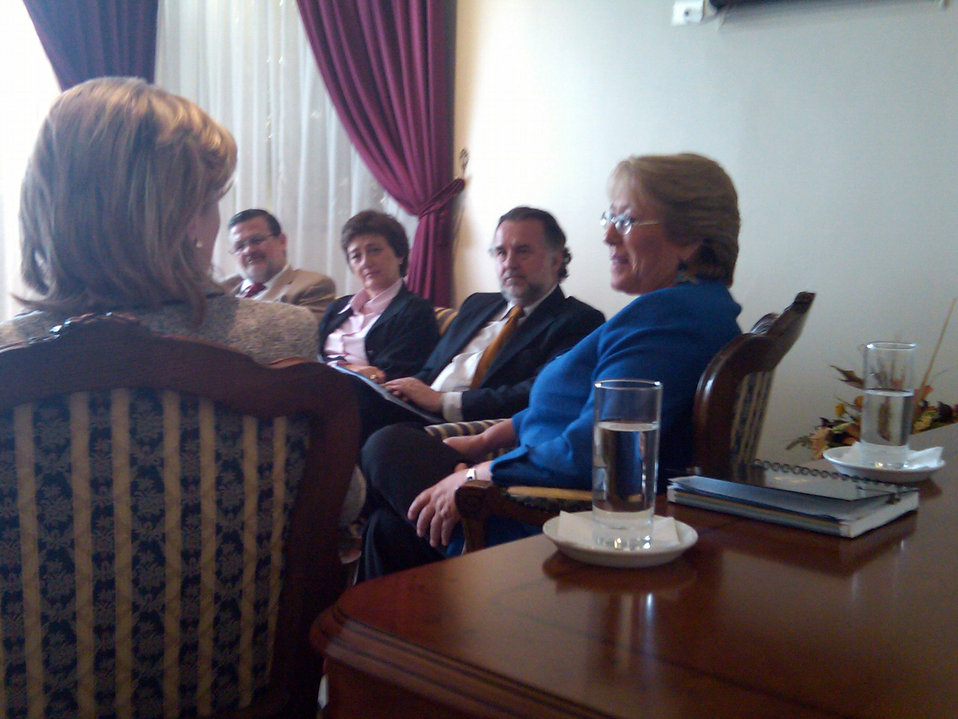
Secretary Clinton Meets With Chilean President

U.S. Secretary of State Hillary Rodham Clinton and U.S. team meet with Chilean President Michelle Bachelet and members of her government at the airport in Santiago, Chile March 2, 2010.